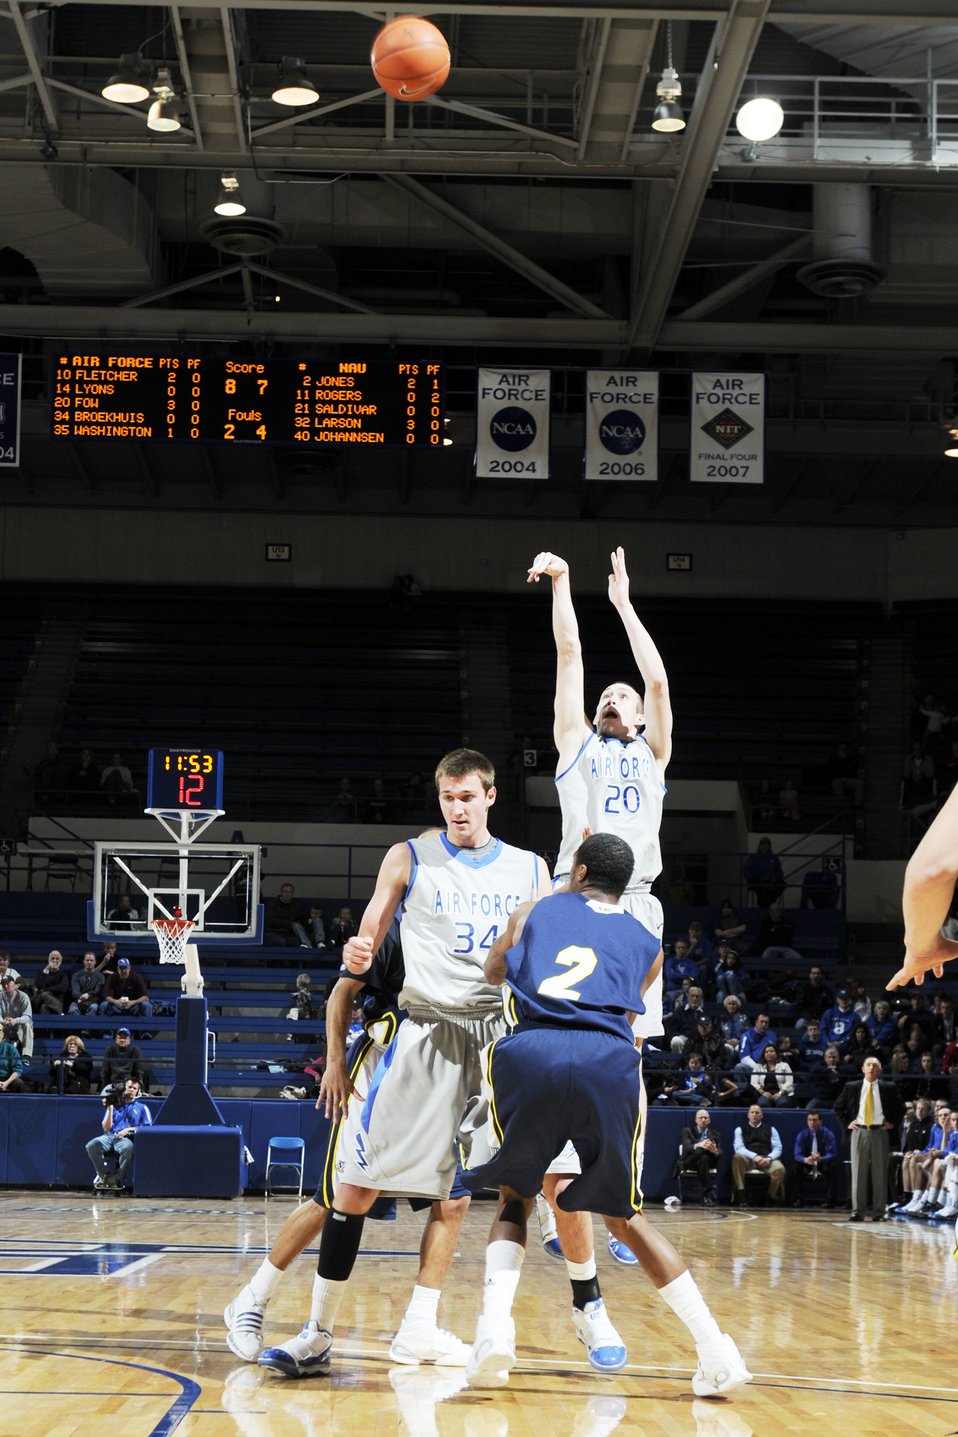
Falcons vs Northern Arizona

Falcon junior forward Tom Fow makes a jump shot for 3 points during the U.S. Air Force Academy game against Northern Arizona at the Academy's Clune Arena Dec. 19, 2009. Air Force lost the game 60-52. Fow led the Falcons with 15 points.